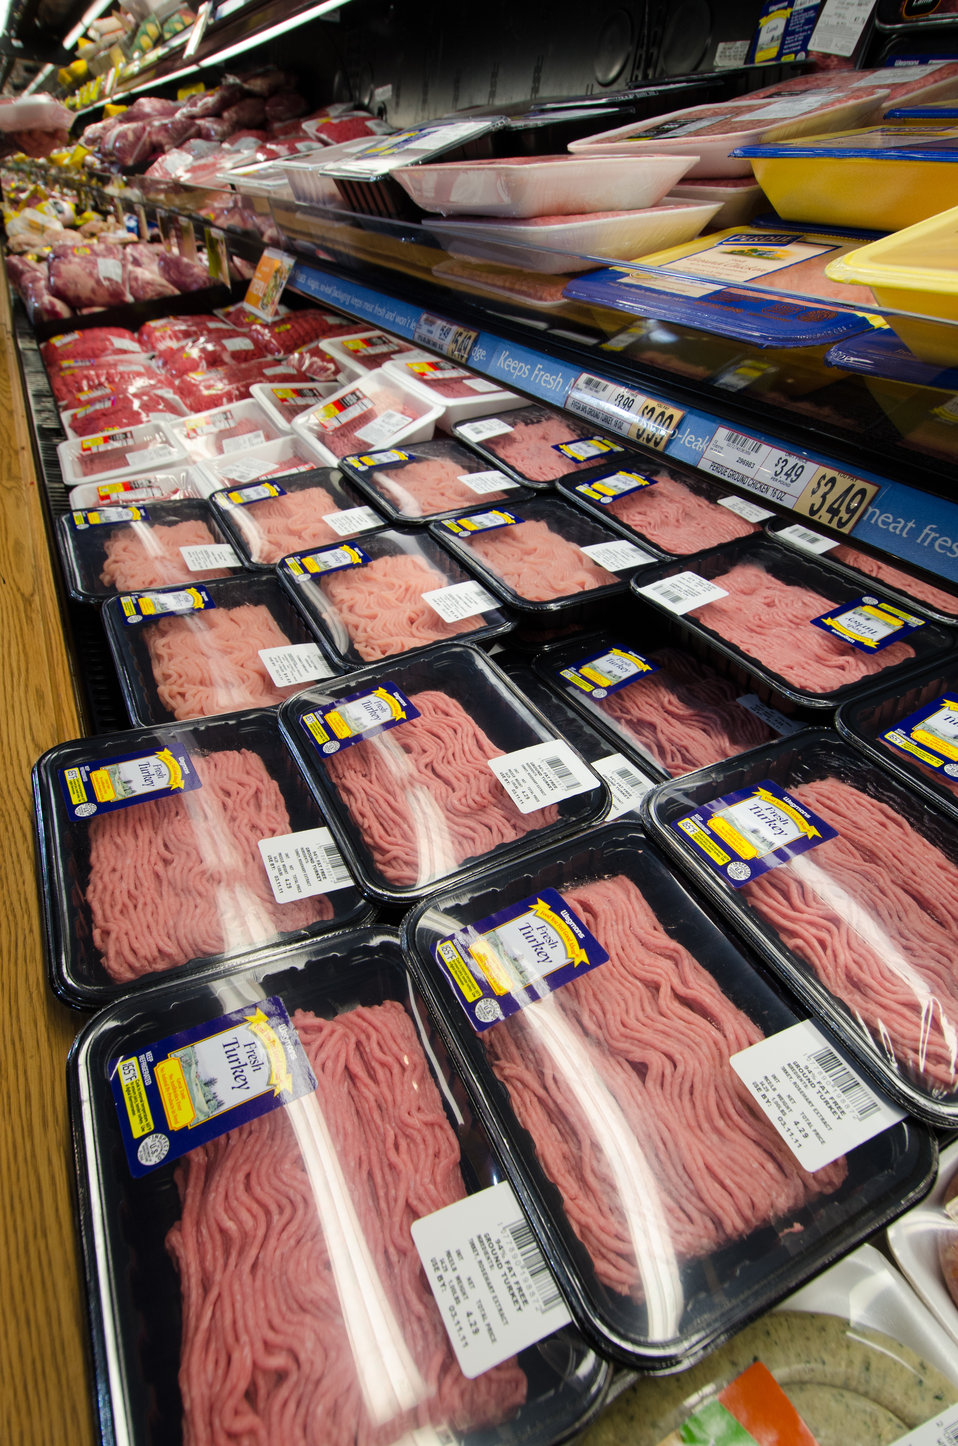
Meat products at a grocery store in Fairfax, Virginia, on March 3, 2011.